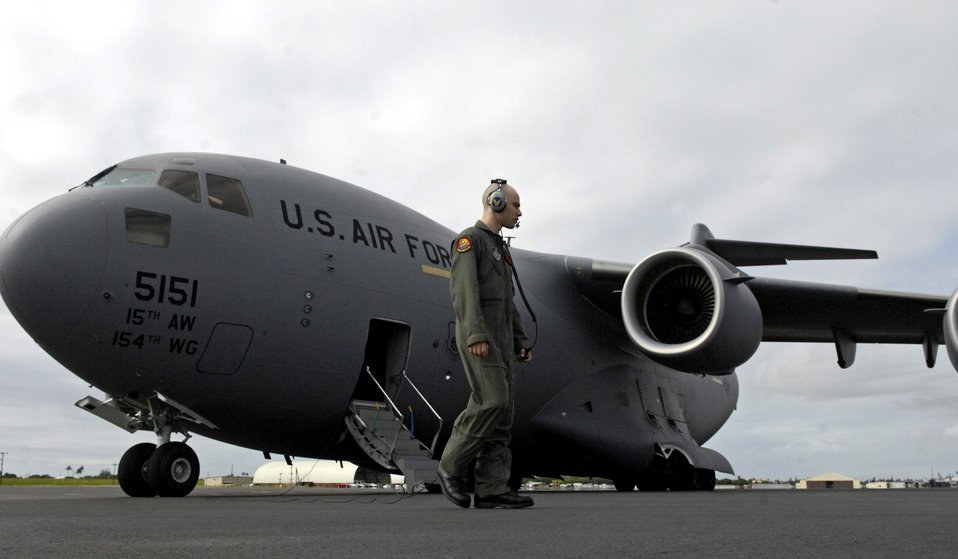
Globemaster training

Senior Airman Nick Kaslin conducts a preflight on his C-17 Globemaster III prior to taking off on a local training mission Nov. 15 from Hickam Air Force Base, Hawaii. Airman Kaslin is a loadmaster with the 535th Airlift Squadron.